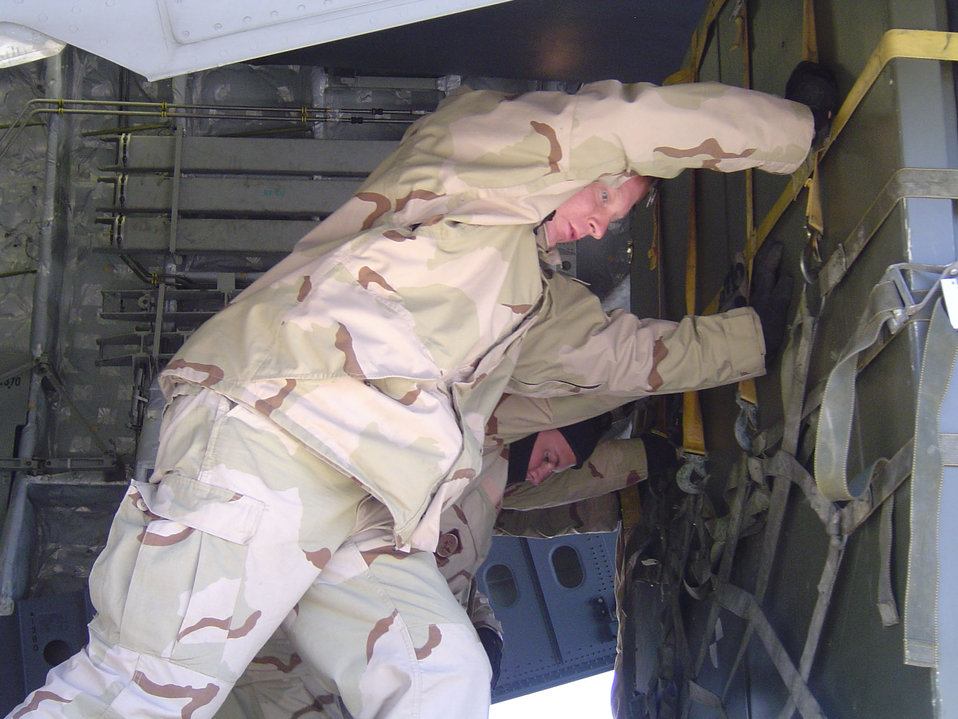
Contingency response team prepares airfield for Italians

HERAT, Afghanistan - (From left) Staff Sgts. Thomas Pollard and Michael Cassell unload a C-17 Globemaster III filled with supplies flown here for the Italian troops, who will assume leadership over the international security assistance force. Sergeants Pollard and Cassell are with the tanker airlift control element's aerial port.